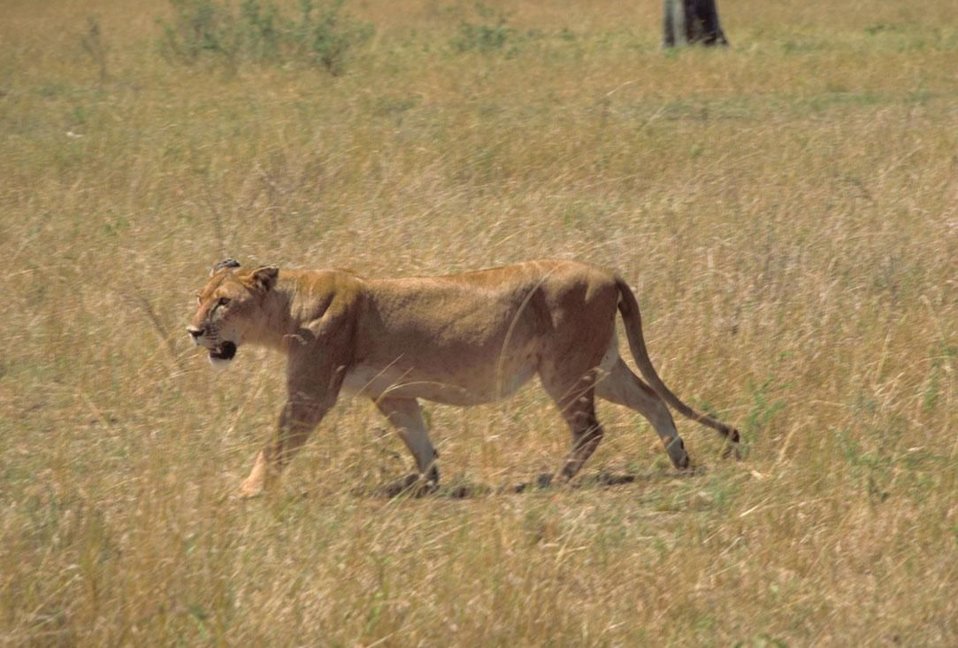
English:
Image title: African lion animal Image from Public domain images website, http://www.public-domain-image.com/full-image/fauna-animals-public-domain-images-pictures/lion-public-domain-images-pictures/african-lion-animal.jpg.html